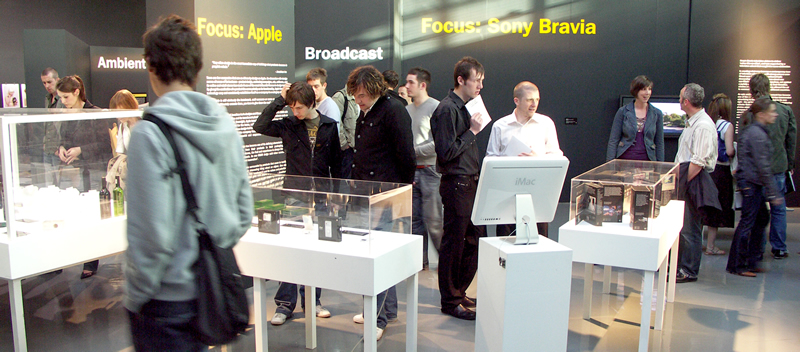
The launch night of the D&AD (design and advertising) Exhibition at Urbis.